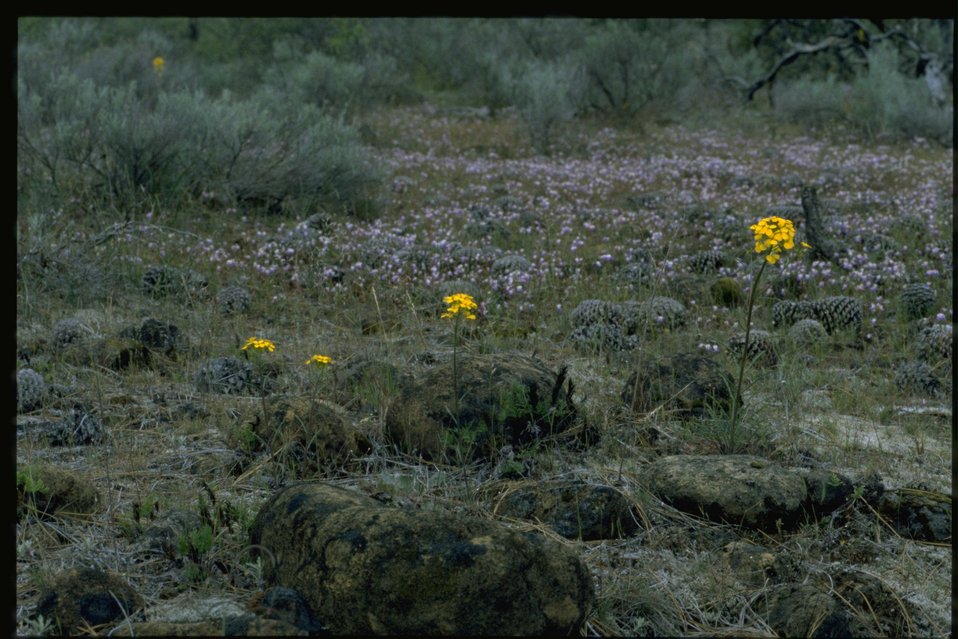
Farshot of Arabis acueolata.